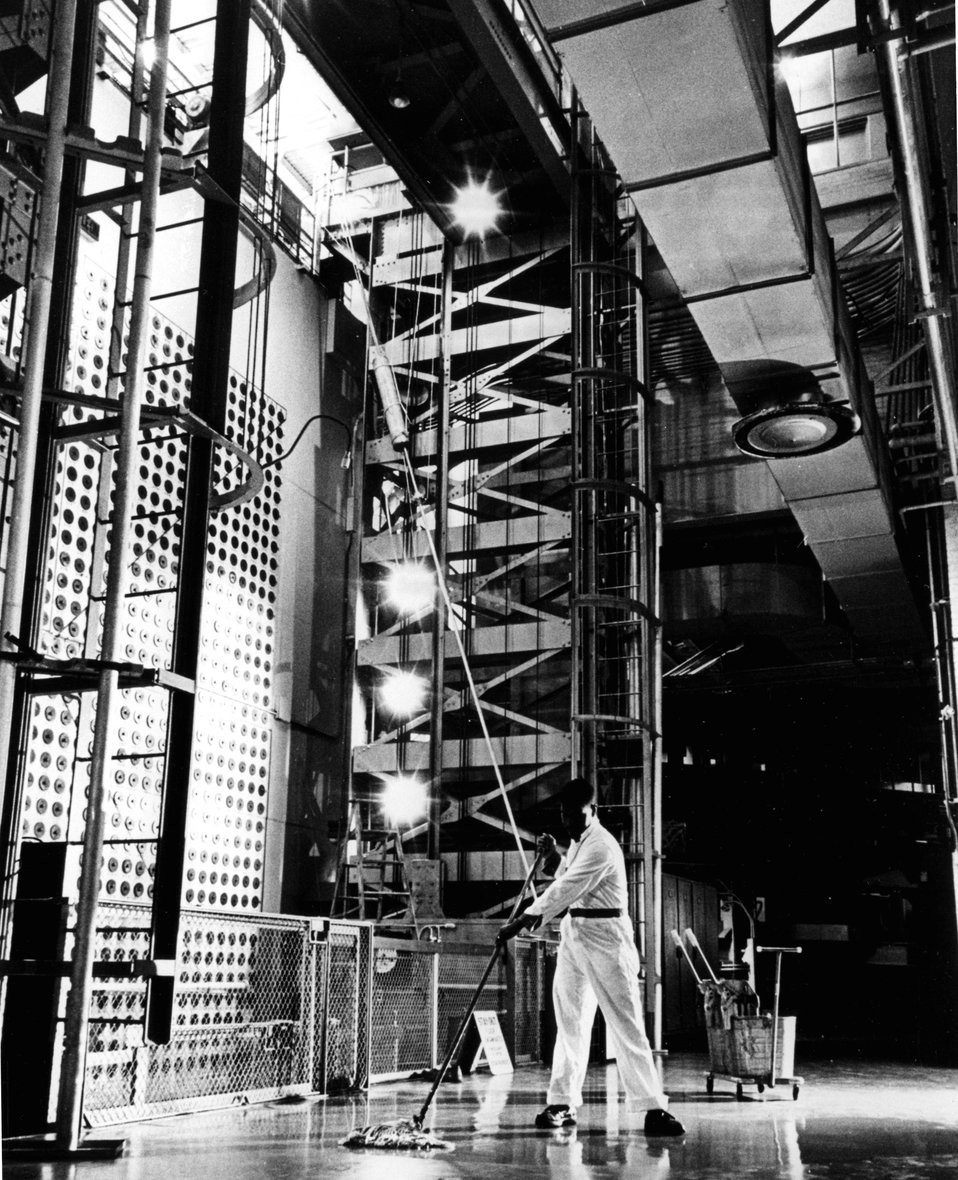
Atomic pile on stand-by basis after 18-year use. c. 1968